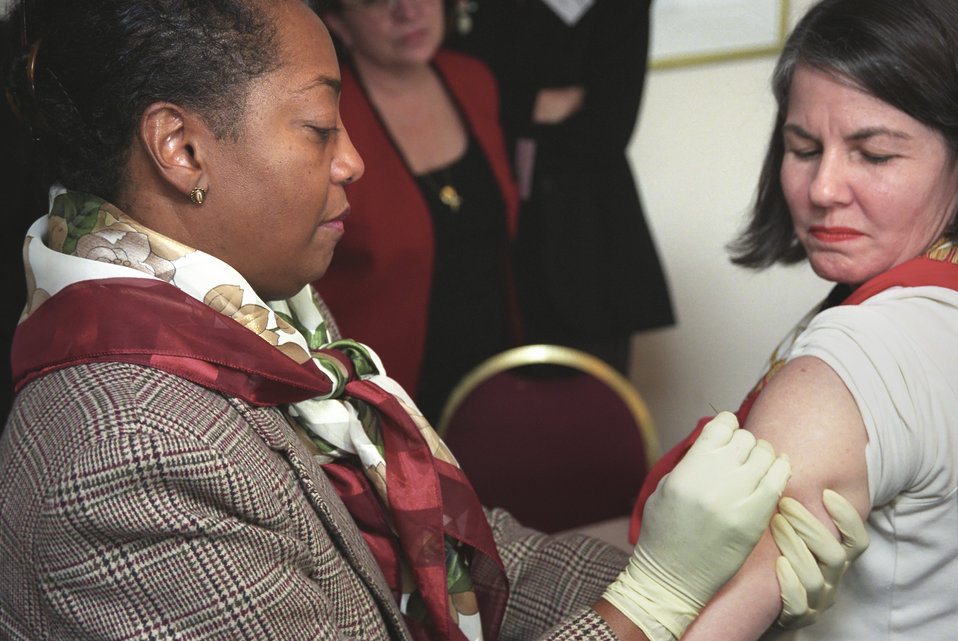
CDC Clinician, Gloria Brynam, RN, (Left), demonstrates proper vaccine application on CDC clinician, Melanie King, RN.